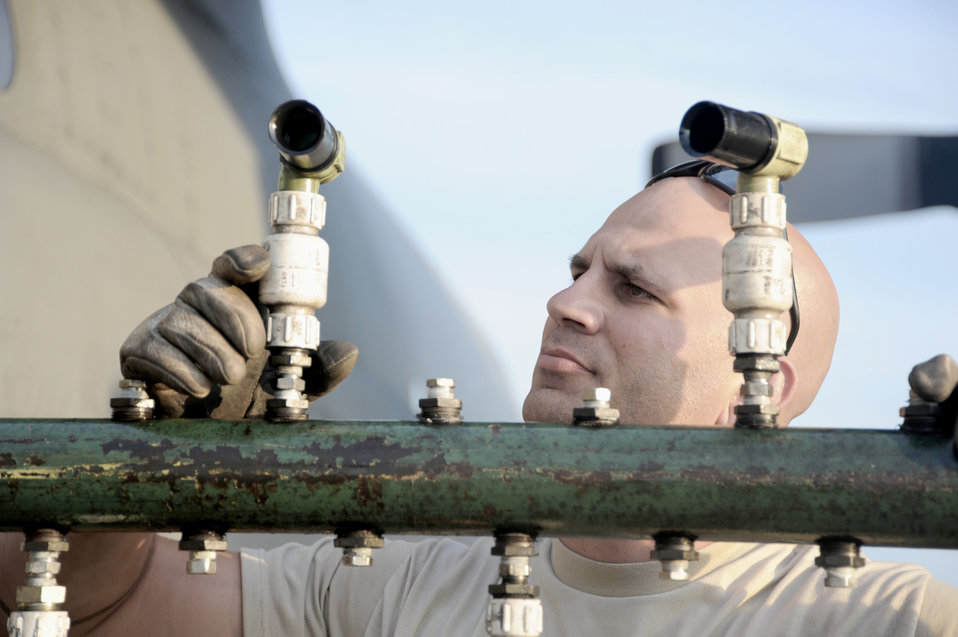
Getting the nozzle just right

Members of the Air Force Reserve Command's 910th Airlift Wing are in Mississippi from Youngstown-Warren Air Reserve Station, Ohio, May 10, 2010, to assist with the Deepwater Horizon oil spill. The 910th AW specializes in aerial spray and is the Department of Defense's only large-area, fixed-wing aerial spray unit.